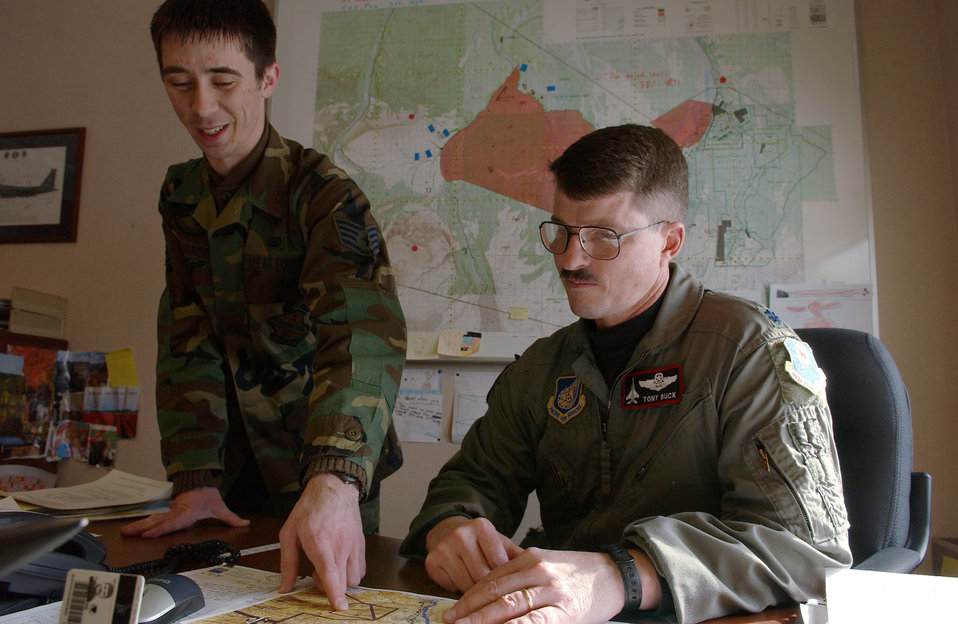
Eielson intelligence flight support Red Flag-Alaska

Staff Sgt. Cory Kegerreis gives a daily intelligence summary to Lt. Col. Tony Buck during Red Flag-Alaska 08-2 April 7 at Eielson Air Force Base, Alaska. Sergeant Kegerreis is responsible for daily intelligence summaries, which are given during the duration of the exercise and entail the scenarios describing what surface-to-air and air-to-air threats the aircrew will have to defeat during their mission, and what tactics the enemy will employ.